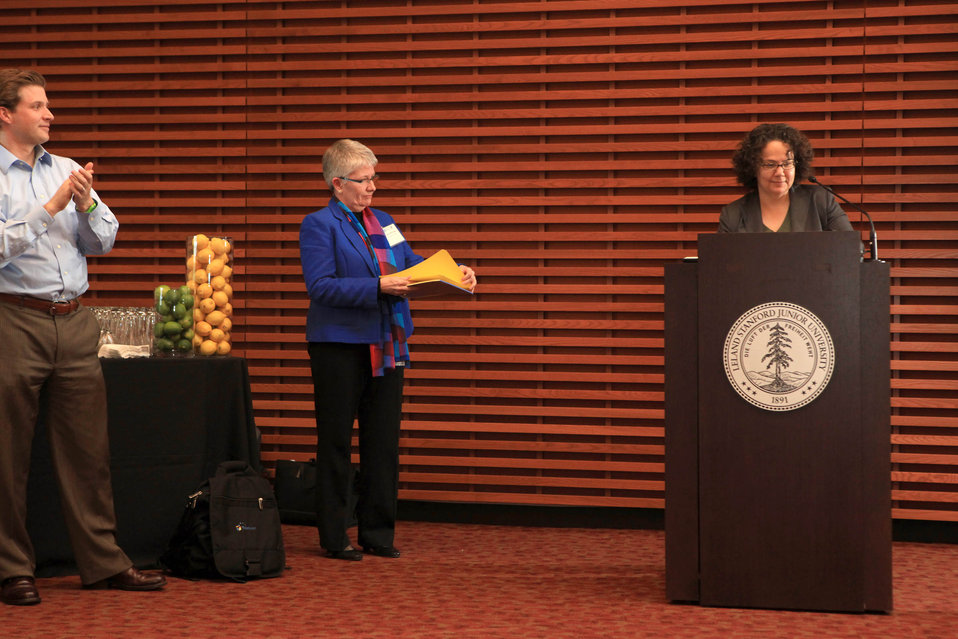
Senior Advisor Alec Ross and Assistant Secretary Jones Applaud Nancy Sutley

Alec Ross, Senior Advisor for Innovation in the Office of Secretary of State Hillary Clinton, left; and Assistant Secretary of State for Oceans and International Environmental and Scientific Affairs Dr. Kerri-Ann Jones, center; applaud as Nancy Sutley, the Chair of the White House Council on Environmental Quality, delivers remarks during the Introductory session of the USRIO 2.0 conference at the Oberndorf Event Center in Stanford, California, on February 2, 2012.